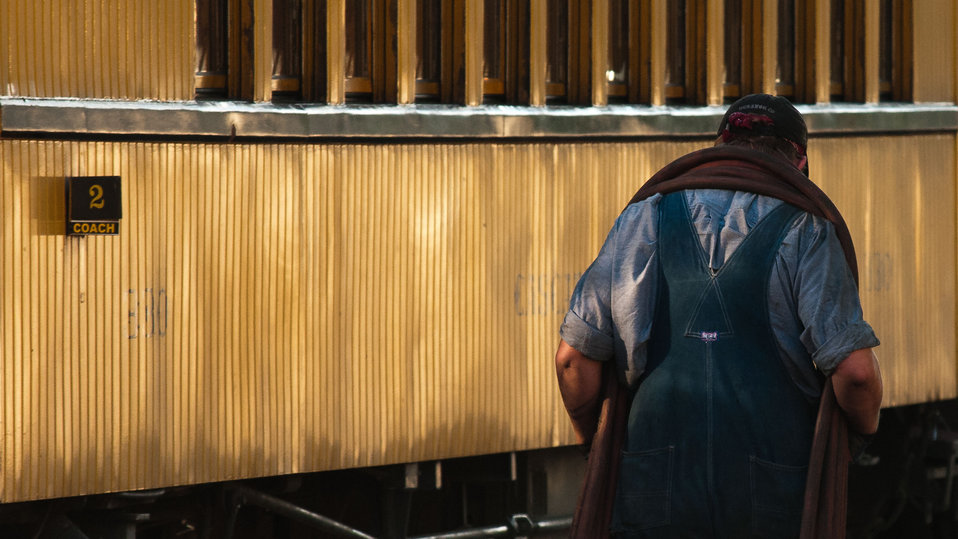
Durango, Colorado is in a historic mining area; now a destination location featuring the Durango & Silverton Narrow Gauge Railroad depot station and other economic providers. Natural resources surround the area. It is home to more than 17,000 people.